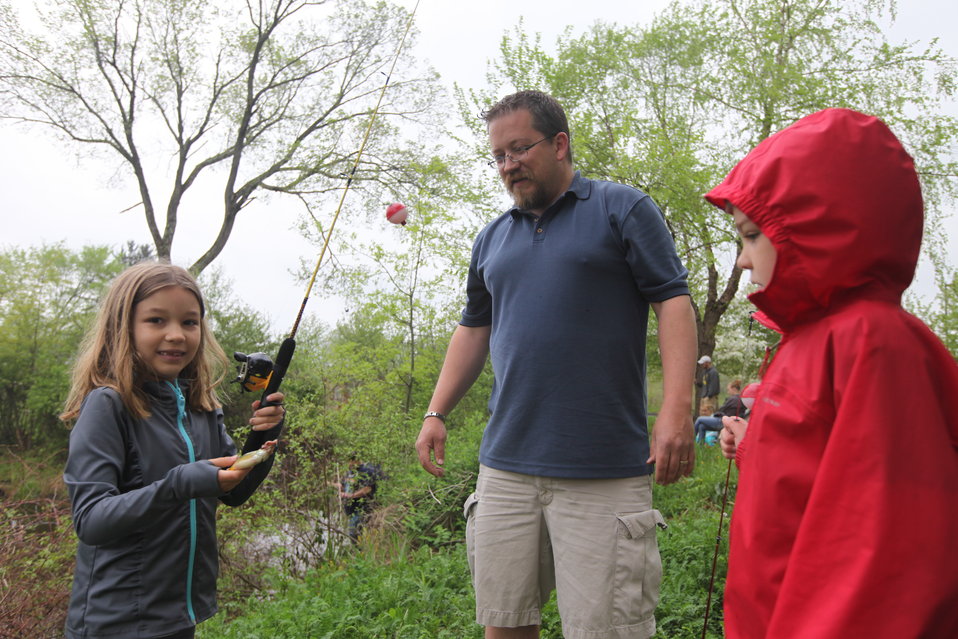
Fishing Derby